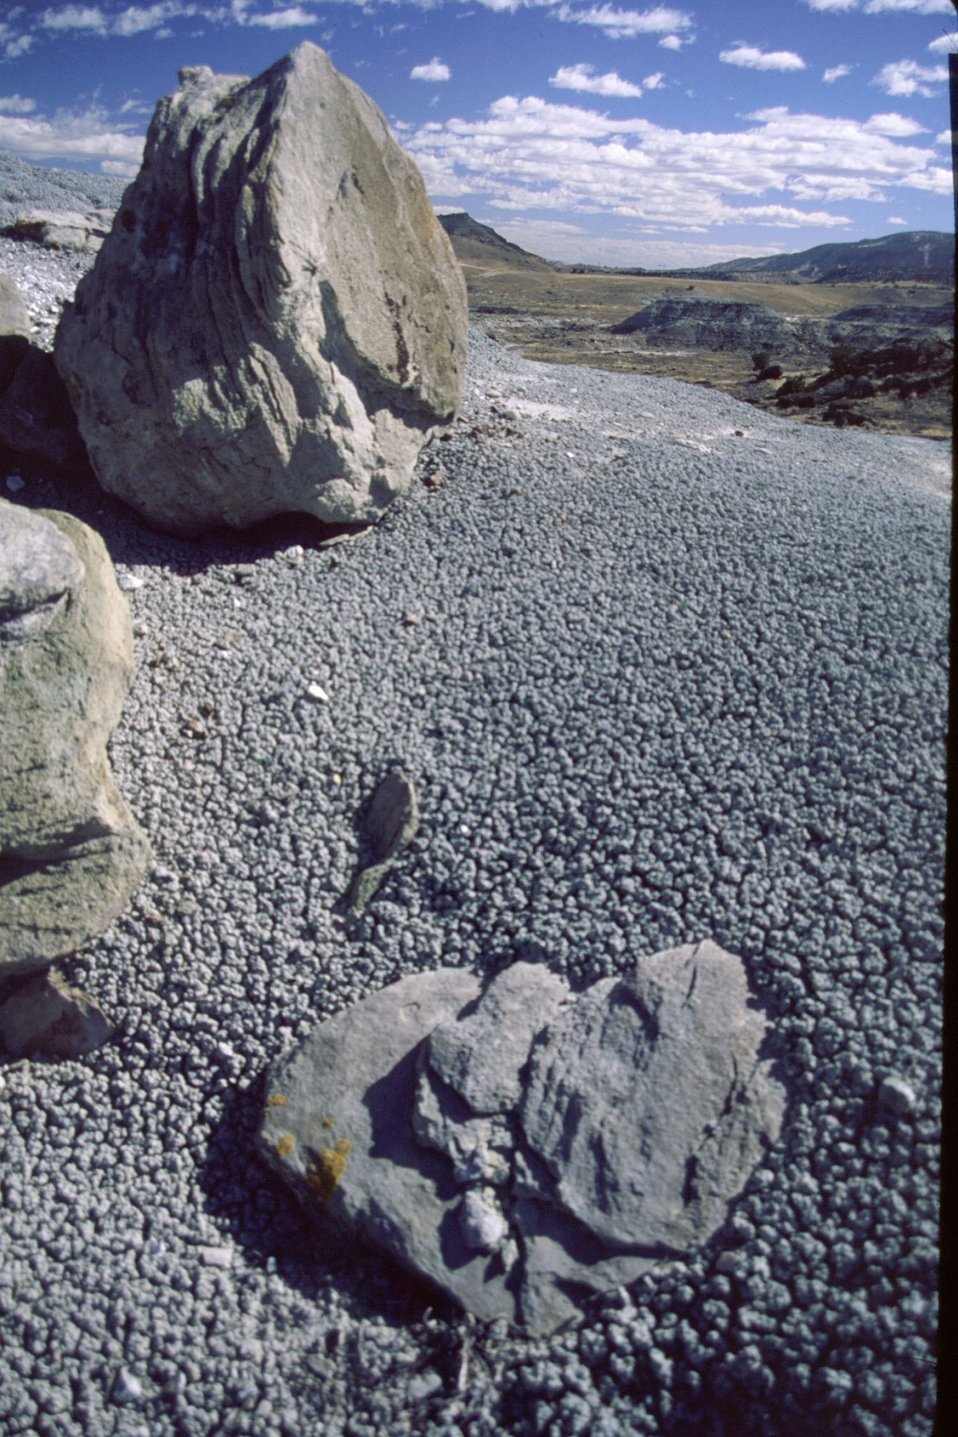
Morrison Formation Fruita Paled Area